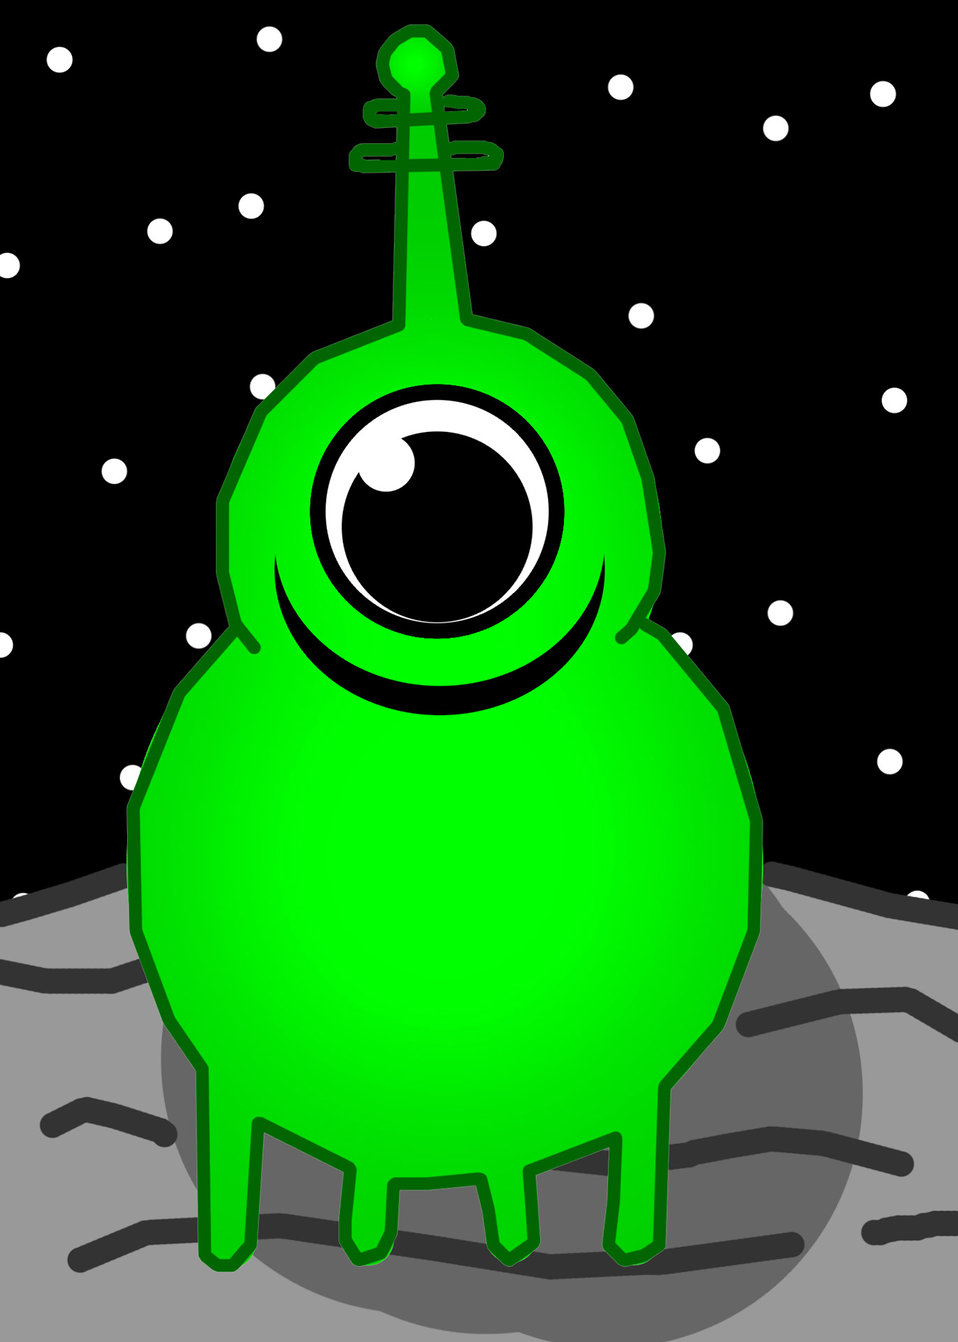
Alien clipart.